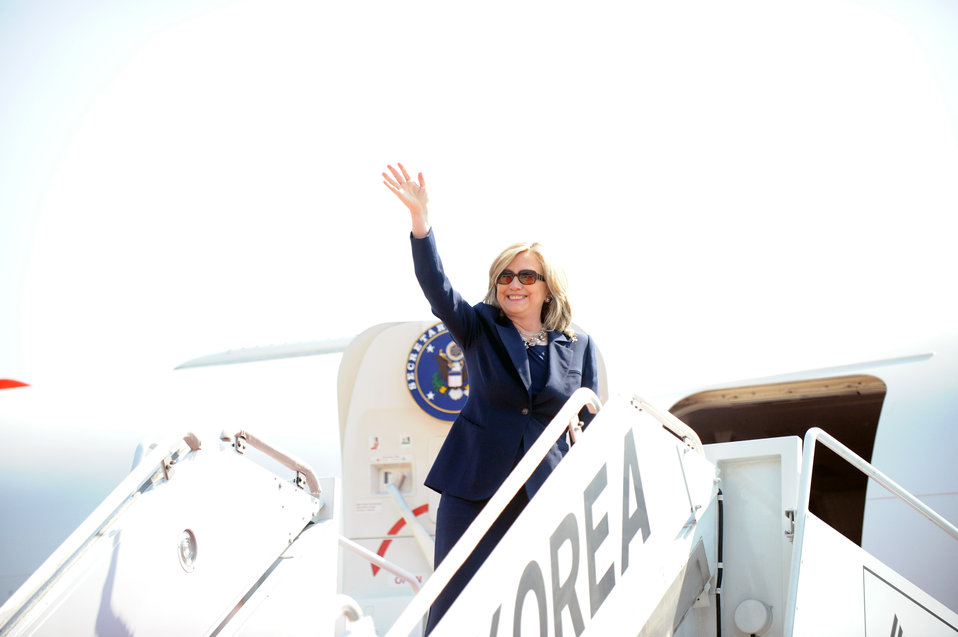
Secretary Clinton Waves Goodbye

U.S. Secretary of State Hillary Rodham Clinton waves goodbye upon her departure from Seoul, South Korea, on April 17, 2011.